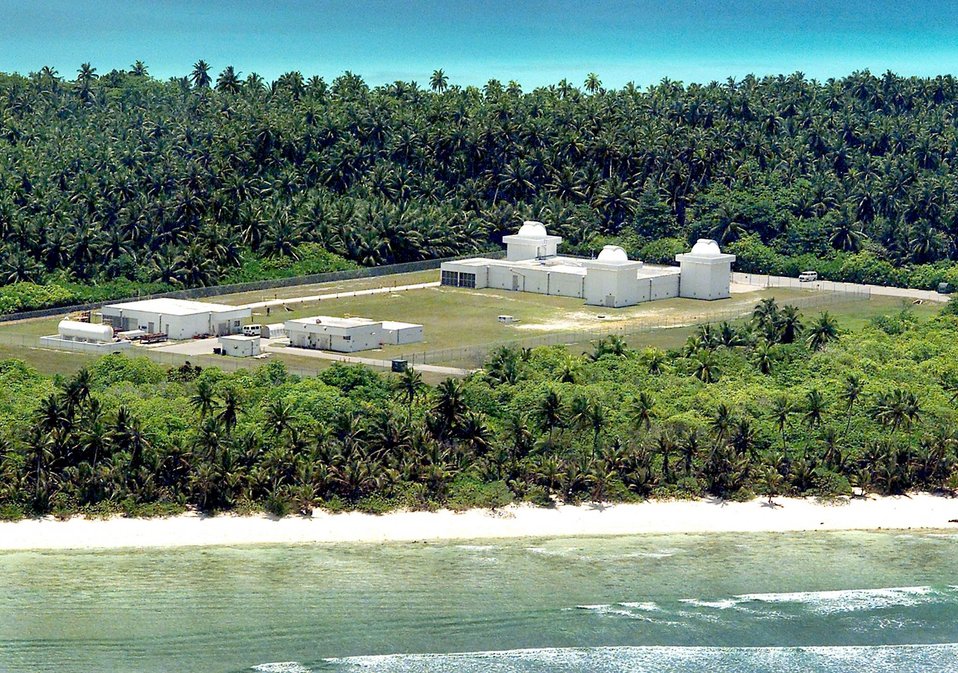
Ground-Based Electro-Optical Deep Space Surveillance

The Ground-Based Electro-Optical Deep Space Surveillance facility at Detachment 2, in Diego Garcia, British Indian OceanTerritory is one of three operational sites worldwide. The facility tracks known manmade deep space objects in orbit around Earth.